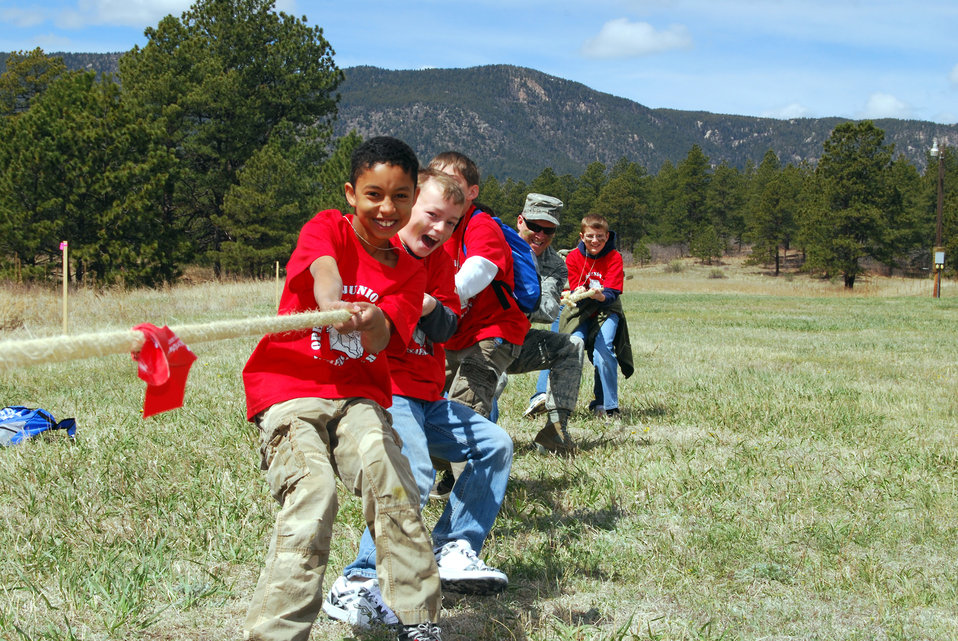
Children 'deploy' to Usafastan

Fadio Fenner, Blandon Beeler, Luke Ryktarsyk, Chief Master Sgt. Thomas Young, Ethan Gunn and Matthew Mikovits give their all in a tug-of-war contest during Operation Junior Deployer May 1, 2010, at the U.S. Air Force Academy in Colorado. Chief Young is the 10th Force Support Squadron superintendent.